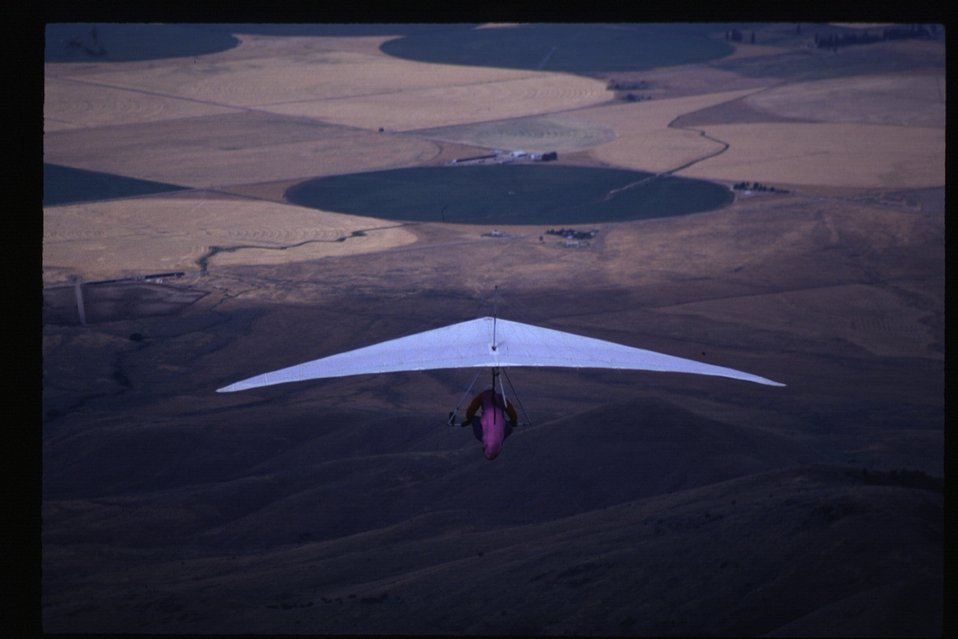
Hang Gliders on King Mountain Arco Idaho Idaho Falls Field Office USRD Upper Snake River District